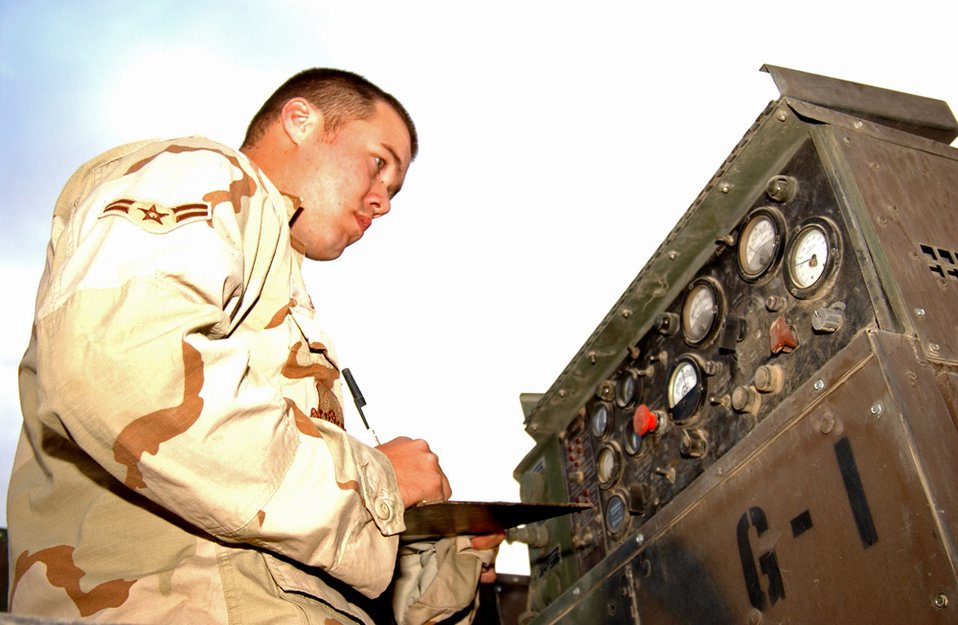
Generator inspection

BALAD AIR BASE, Iraq (AFPN) -- Airman 1st Class Mark Baugh, 727th Expeditionary Air Control Squadron, documents a generator inspection. The generators outside of the compound here are inspected every three hours. Airman Baugh is with the 727th Expeditionary Air Control Squadron.